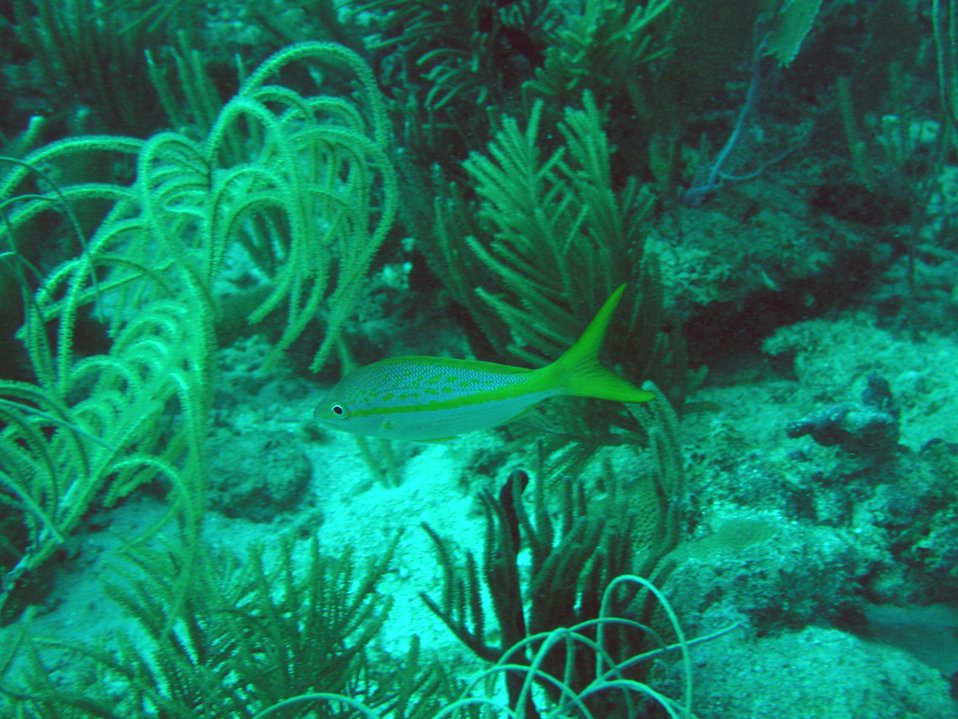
Yellowtail snapper (Ocyurus chrysurus)